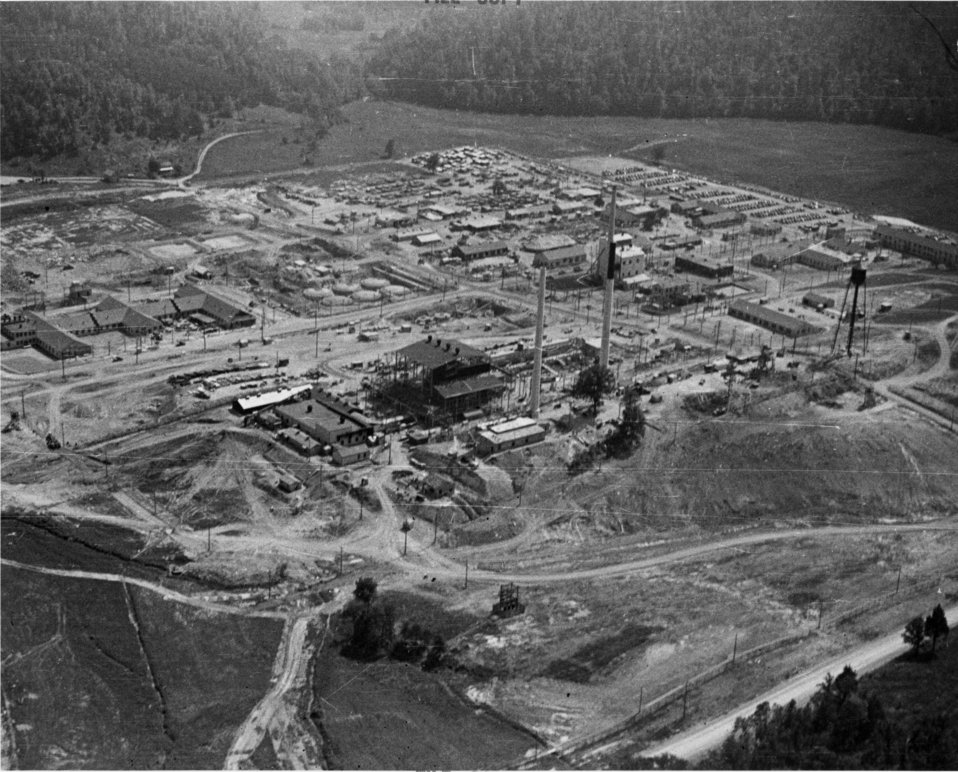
4

76-11 file # 64 1943
Aerial View Construction of Graphite Reactor